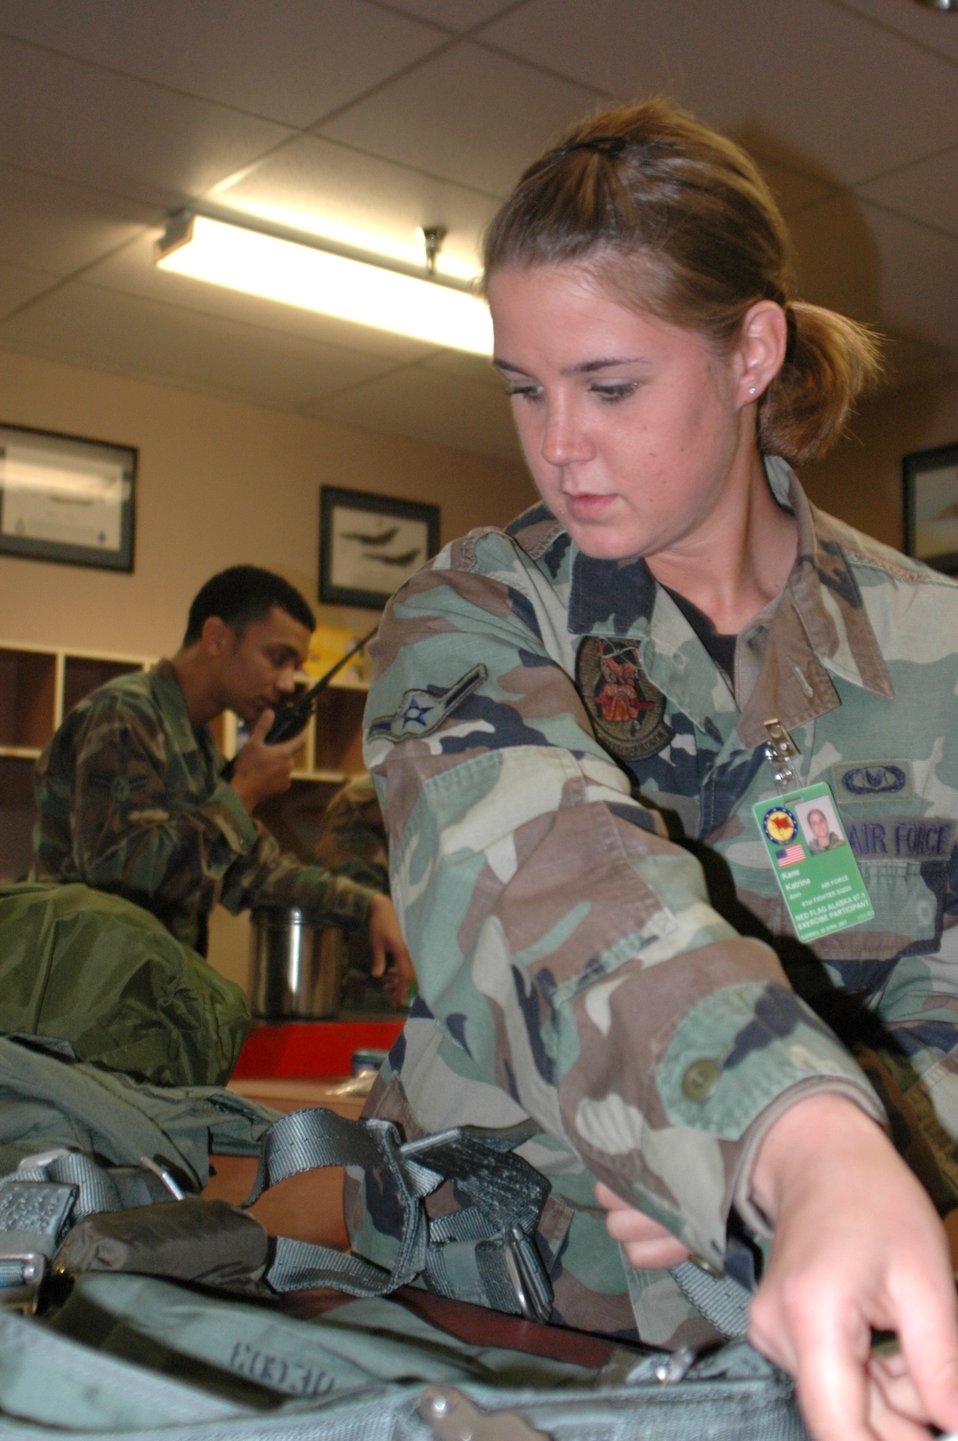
Luke team trains for combat at Red Flag-Alaska

Airman Katrina Kane breaks down aircrew gear during Red Flag-Alaska 07-1 April 11 at Eielson Air Force Base, Alaska. Red Flag-Alaska is a Pacific Air Forces-directed field training exercise flown under simulated air combat conditions. It is conducted on the Pacific Alaskan Range Complex with air operations flown out of Eielson and Elmendorf Air Force bases. Airman Kane is a 61st Fighter Squadron life support specialist.